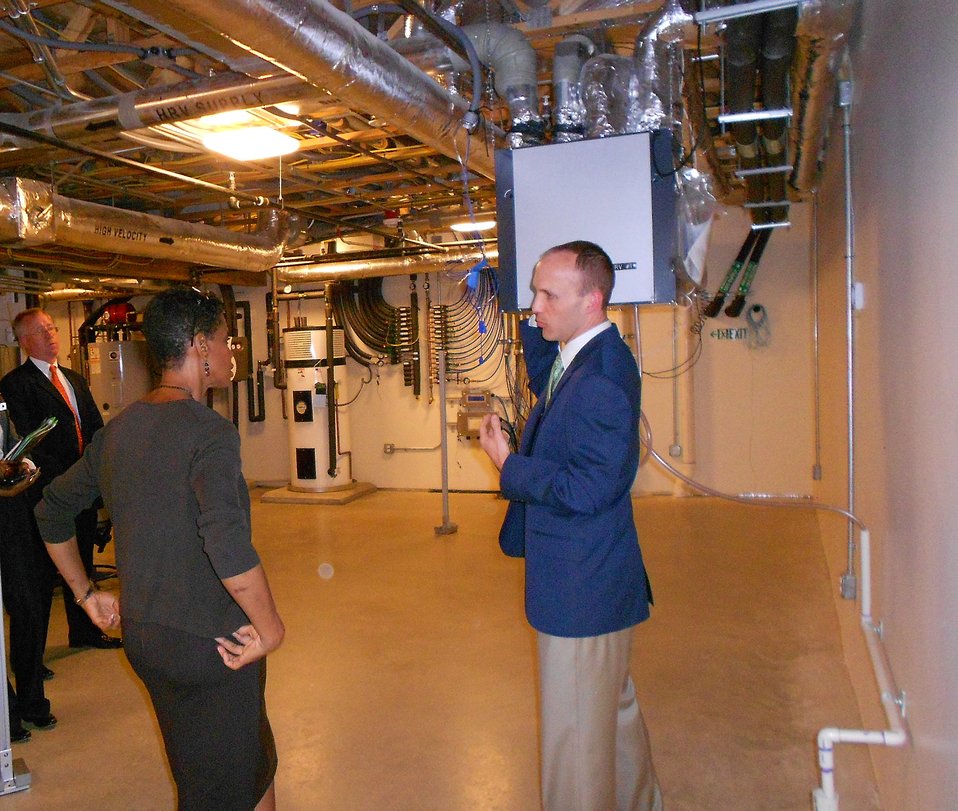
Edwards NZERTF Tour #3

William Healy (right), Leader of the Alternative Energy Systems Group in NIST’s Engineering Laboratory describes the properties of the heat exchanging system in the basement of the NIST Net Zero Energy Residential Test Facility to U.S. Congresswoman Donna Edwards (left) from Maryland’s 4th District.